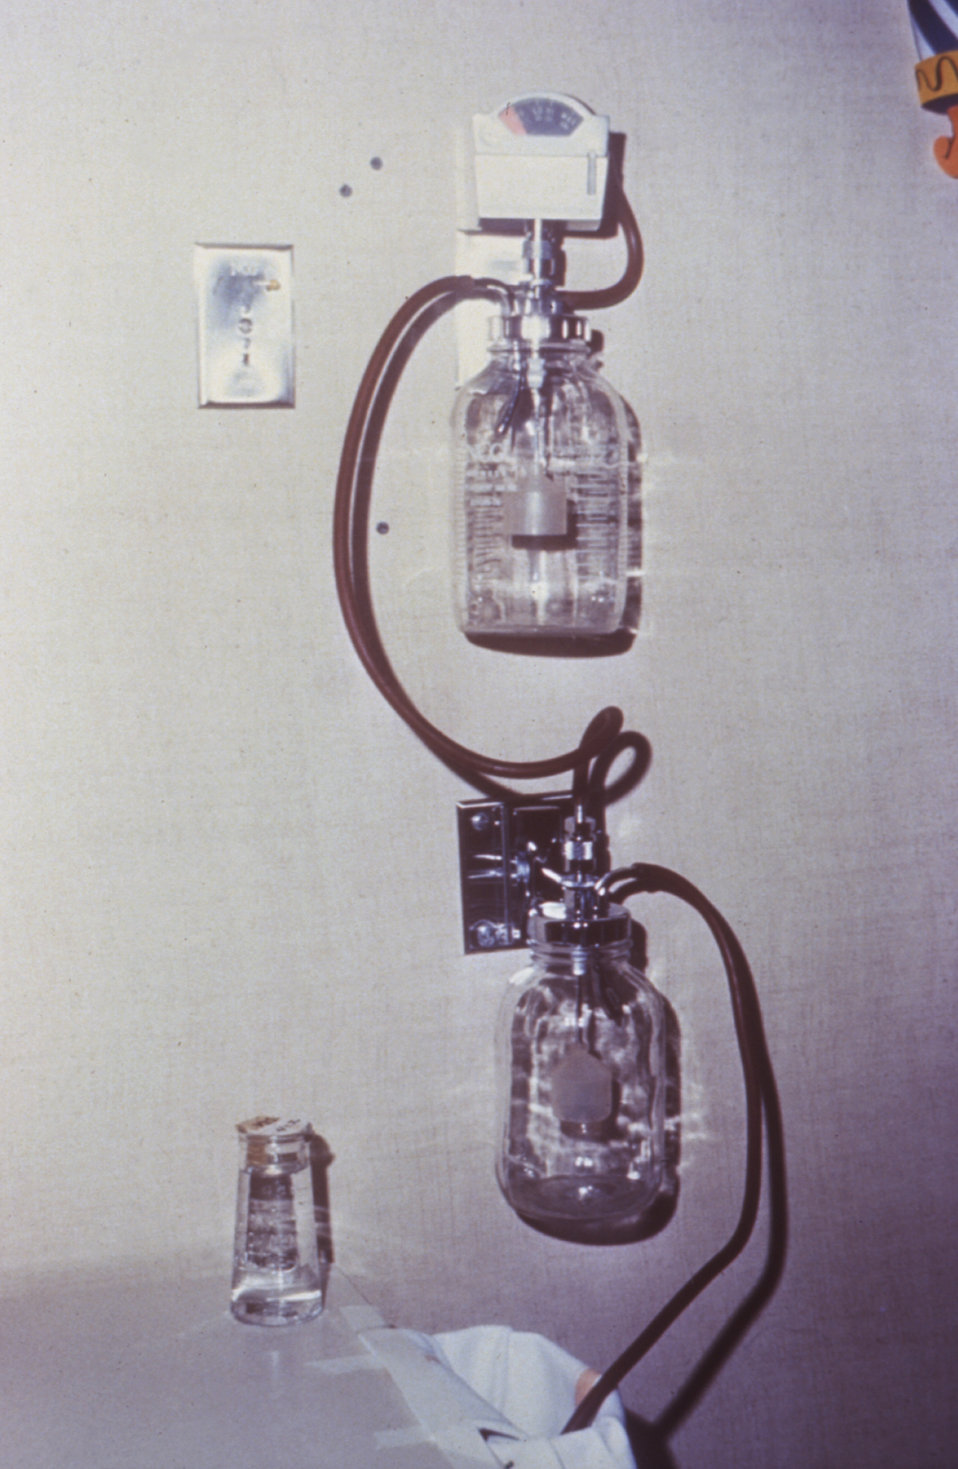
This is a 1970 photograph inside a hospital room depicting a wall-mounted suction bottle.